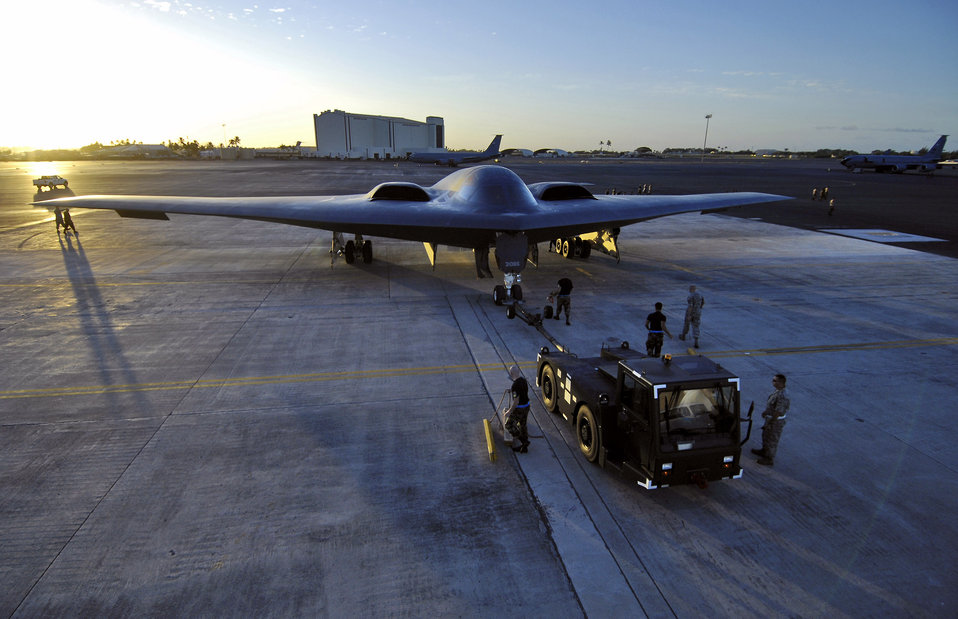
A visiting Spirit

A B-2 Spirit is towed to a parking spot Feb. 12 at Hickam Air Force Base, Hawaii. The B-2, from the 509th Bomb Wing at Whiteman Air Force Base, Mo., is one of four bombers currently deployed to Andersen Air Force Base, Guam, as part of U.S. Pacific Command's continuous bomber presence.